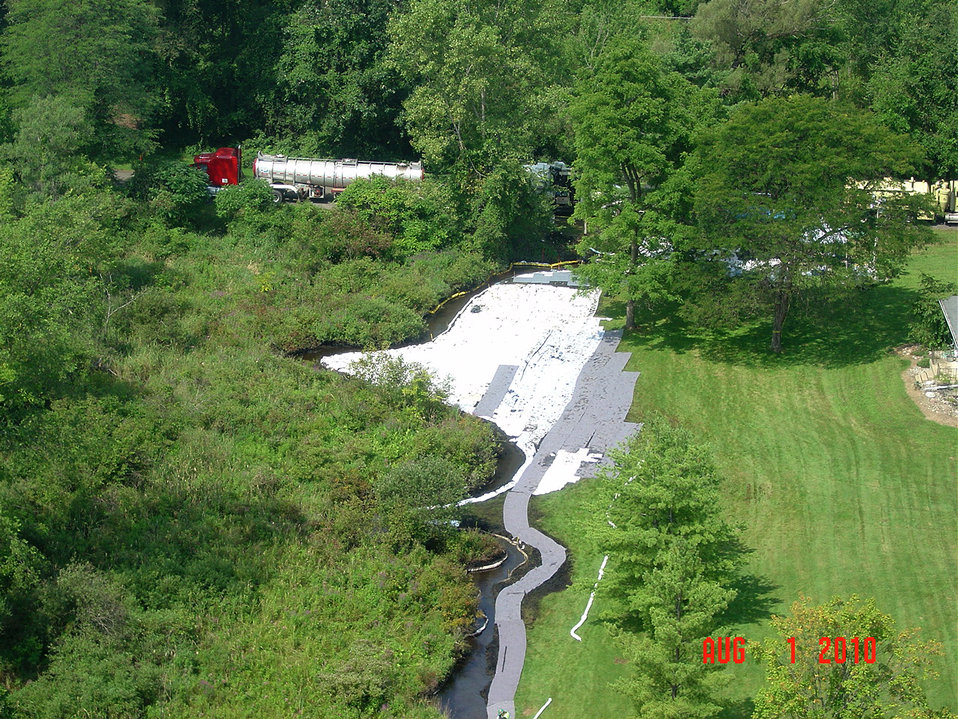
EPA's response to the Enbridge oil spill

August 1, 2010 - Absorbent pads for sheen collection on Talmadge Creek, near Battle Creek Michigan, in response to the Enbridge oil spill.